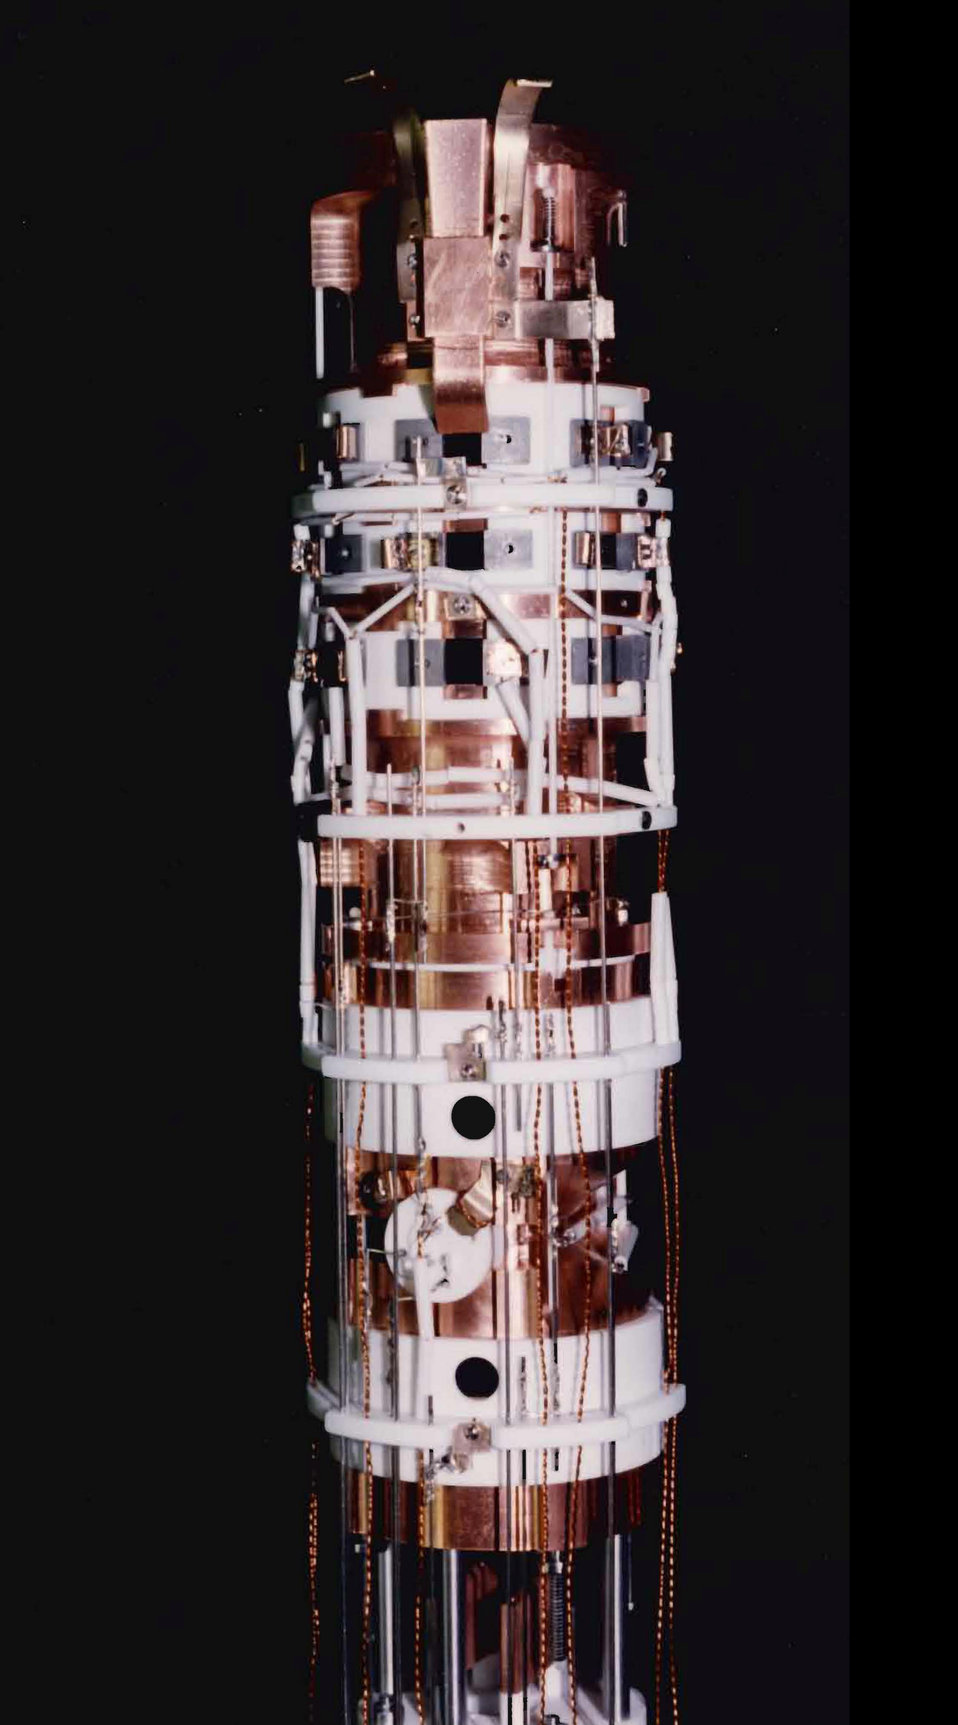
Yoctonewton

The NIST force sensor is a crystal of ions (charged atoms) trapped inside the upper region of the copper cylinder. A laser beam directed upward through the trap cools the ions. A force is applied in the form of oscillating electric field, and a detector (not shown) measures the light reflected off the ions.